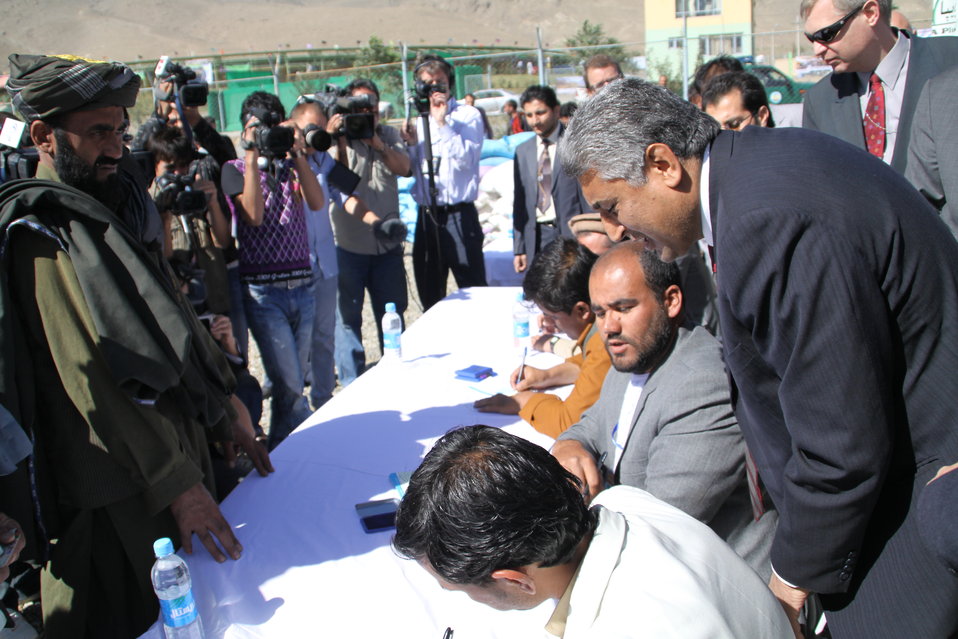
افغانی بزګرانو د ۲۰۱۰کال د غنمو د تخم د ویش په پرورګرام(AVIPA) کی برخه واخیسته